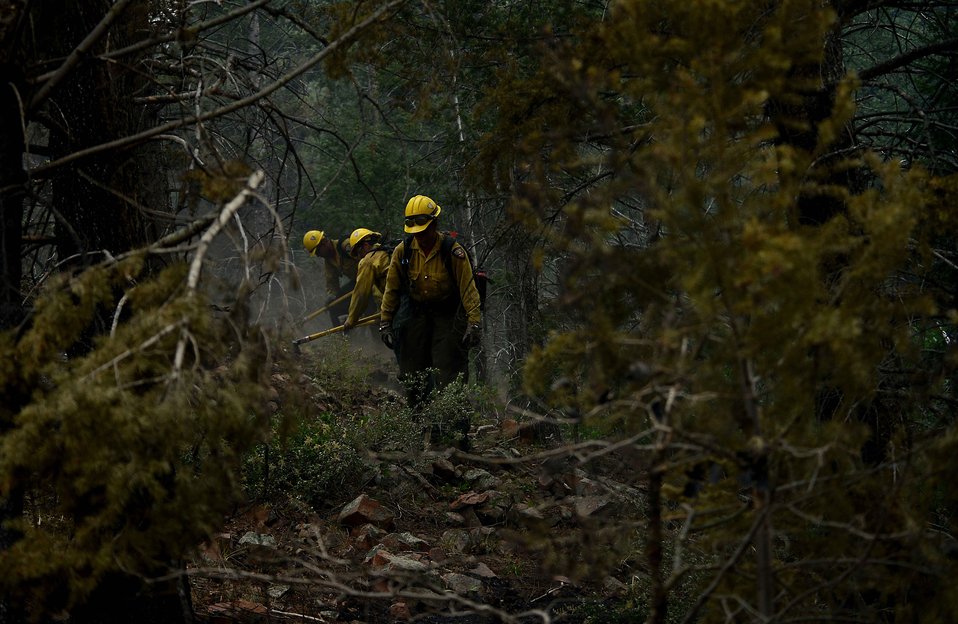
Battle

While helping to battle several fires in Waldo Canyon, firefighters with the Vandenberg Air Force Base, Calif., Hot Shots cut a fire line in the Mount Saint Francois area of Colorado Springs, Colo., June 28, 2012. The Waldo Canyon fire has grown to 18,500 acres and burned more than 300 homes.